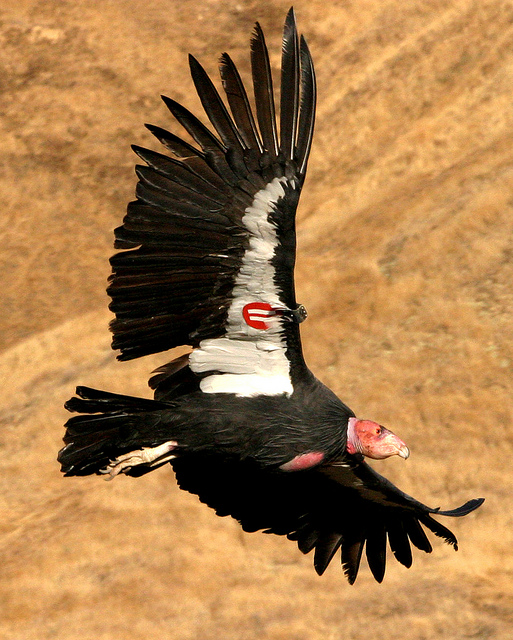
California condor

Bitter Creek National Wildlife Refuge, CA